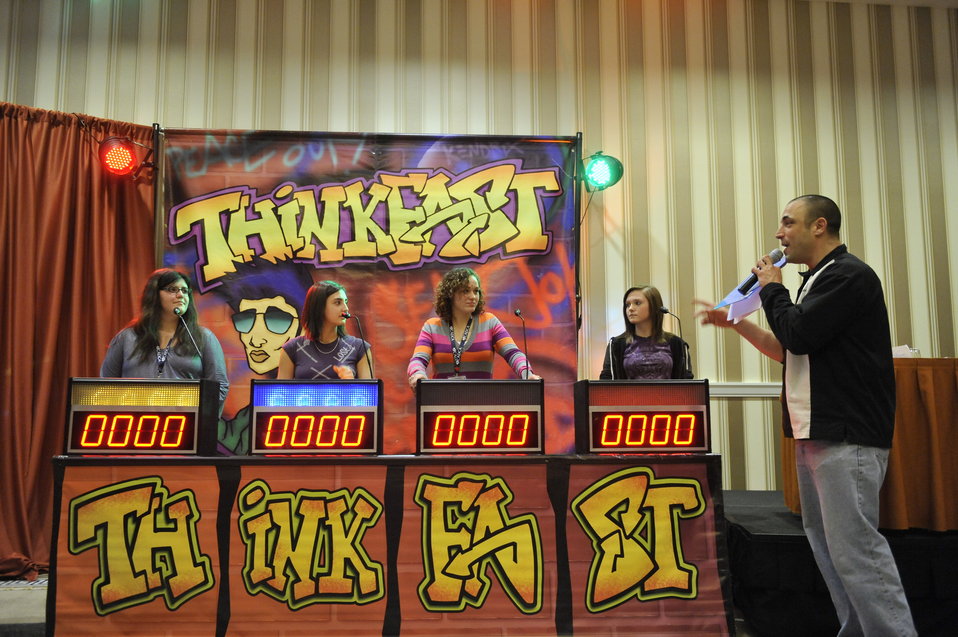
Teens test their knowledge of drug facts and myths during CADCA’s National Leadership Forum.